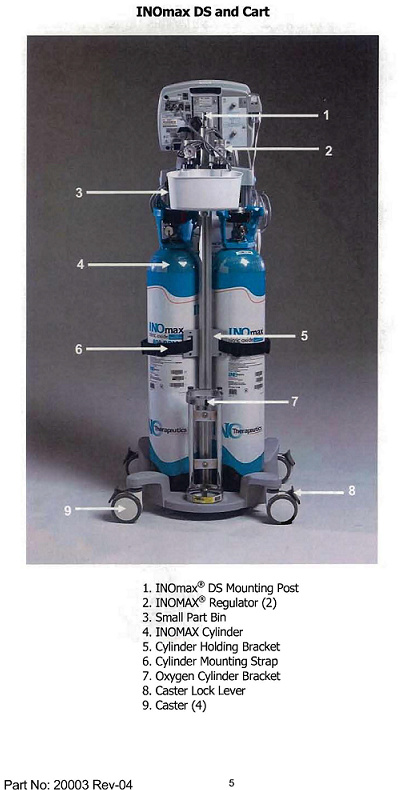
RECALLED - INOMAX DS Drug-Delivery System

December 22, 2011 - Product Recall - IKARIA® Issues Notice of Completed Remediation For
INOMAX® DS Drug-Delivery System.